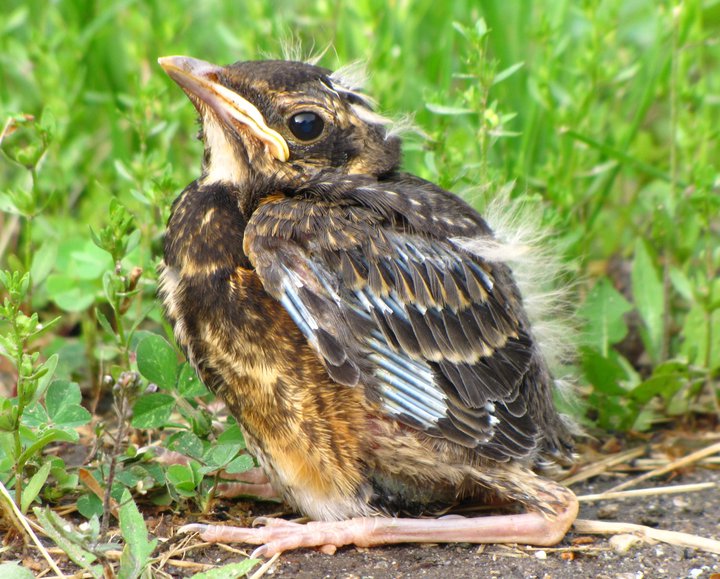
american robin chick

Port Louisa National Wildlife Refuge